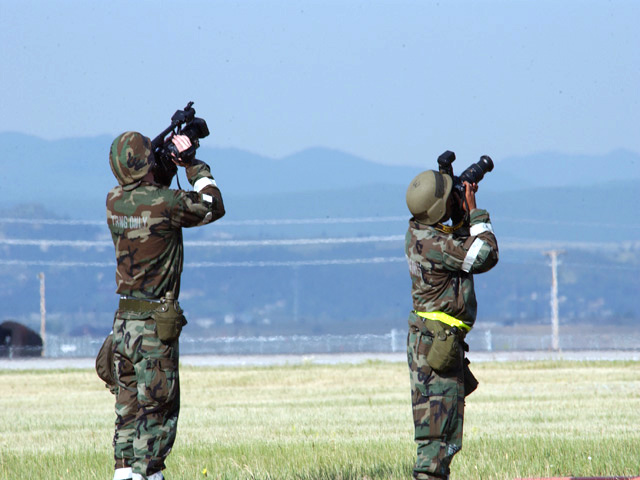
Lancer operations

Airman 1st Class Kristopher Kingan (left) and Tech. Sgt. Timothy Coleman document a B-1 Lancer during an operational readiness exercise at Ellsworth Air Force Base, S.D., on Tuesday, June 27. Airman Kingan is a videographer and Sergeant Coleman is a still photographer with the 28th Communications Squadron.